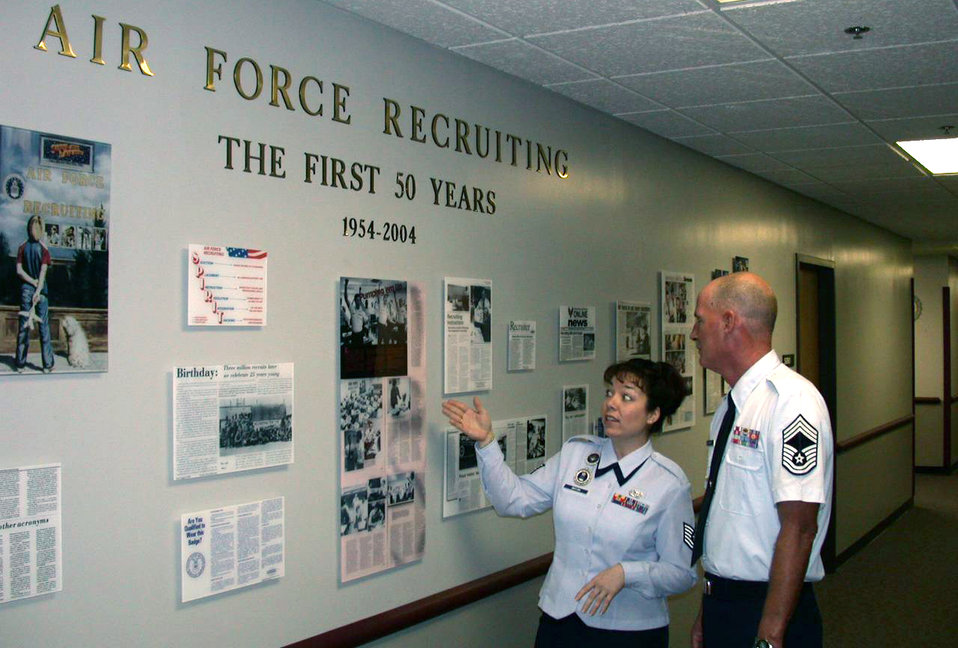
Recruiting

LACKLAND AIR FORCE BASE, Texas -- Recruiter instructor Tech. Sgt. Lynn Bryan shows Chief Master Sgt. Gerald Thayer the Air Force Recruiting School's redecorated entrance hallway. Sergeant Bryan used newspaper and magazine stories covering the school's 50-year history. Chief Thayer is the school's commandant.